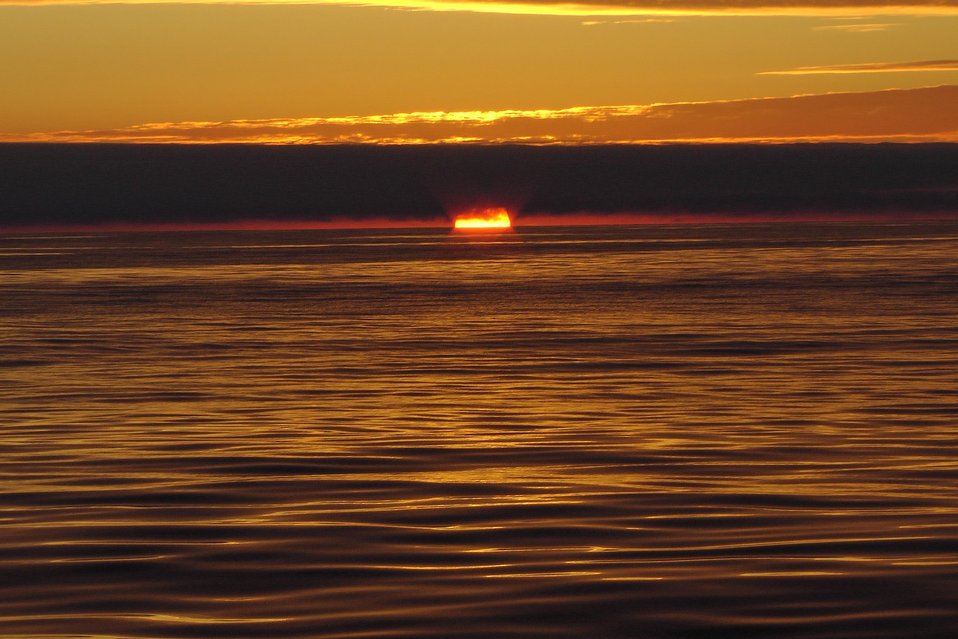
Sunset at sea